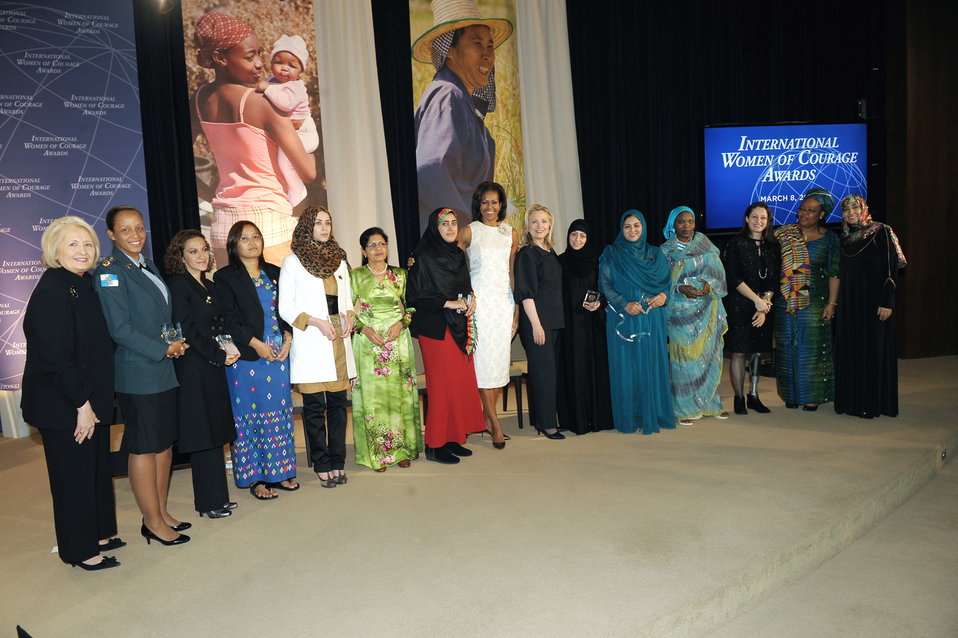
Secretary Clinton, First Lady Obama, and Ambassador Verveer With 2012 IWOC Award Winners

U.S. Secretary of State Hillary Rodham Clinton, center right; First Lady Michelle Obama, center left; and Ambassador-at-Large for Global Women's Issues Melanne Verveer, left; pose for a photo with the 2012 International Women of Courage Award winners at the U.S. Department of State in Washington, D.C., on March 8, 2012.